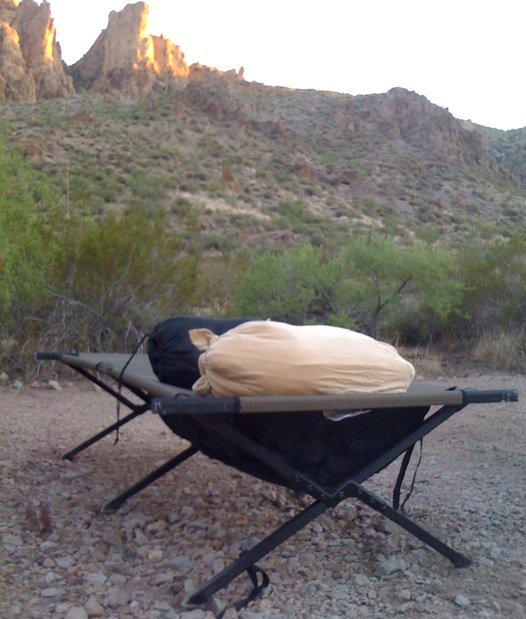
camping under the stars at Kofa National Wildlife Refuge, AZ

Photo: Kelly Lockman, USFWS
2011 Wilderness Fellow